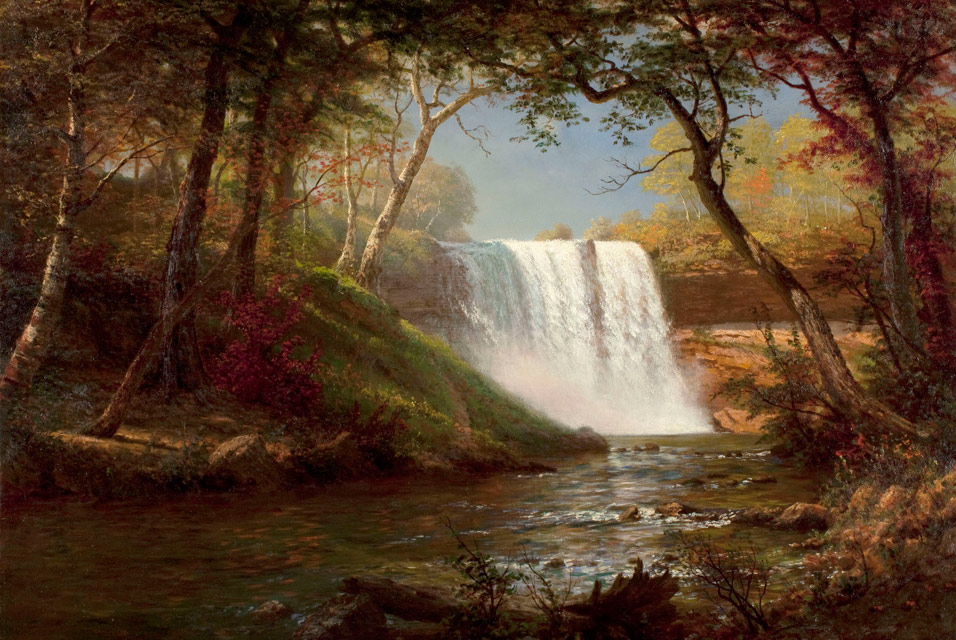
'Minnehaha Falls' — by Albert Bierstadt; oil on canvas painting; 19th century. Painting of the Minnehaha Falls, located in Hennepin County, Minnesota.